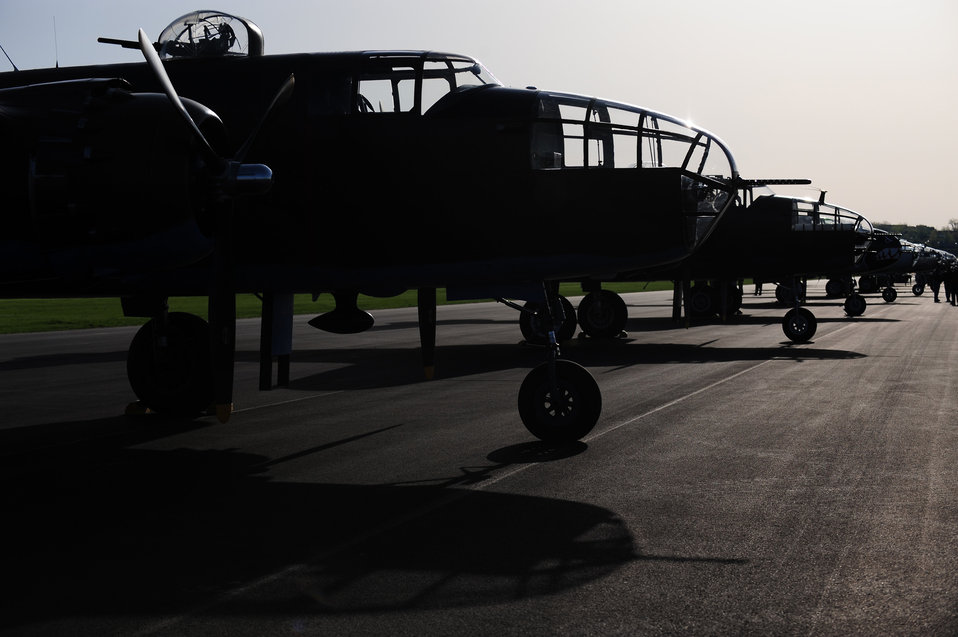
68th Doolittle Raiders Reunion

Vintage B-25 Mitchell aircraft are displayed at the National Museum of the U.S. Air Force at Wright Patterson Air Force Base, Ohio, to take part in events honoring the Doolittle Raiders' 68th reunion, April 17, 2010. The event commemorates the anniversary of the Doolittle Tokyo Raid when on April 18, 1942, U.S. Army Air Forces Lt. Col. Jimmy Doolittle's squad of 16 B-25s bombed targets in response to the Japanese attack on Pearl Harbor.